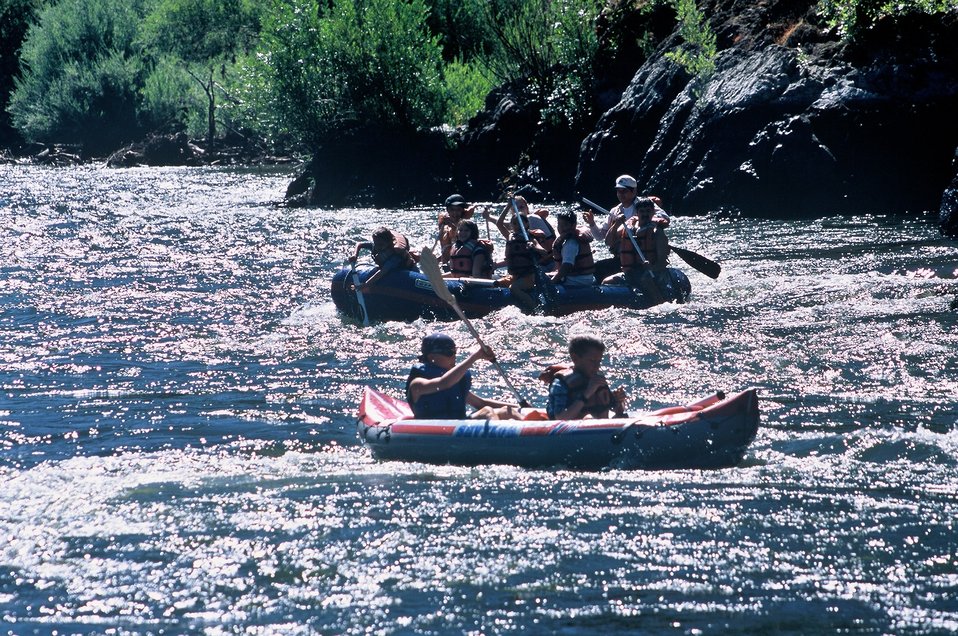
Hog Creek